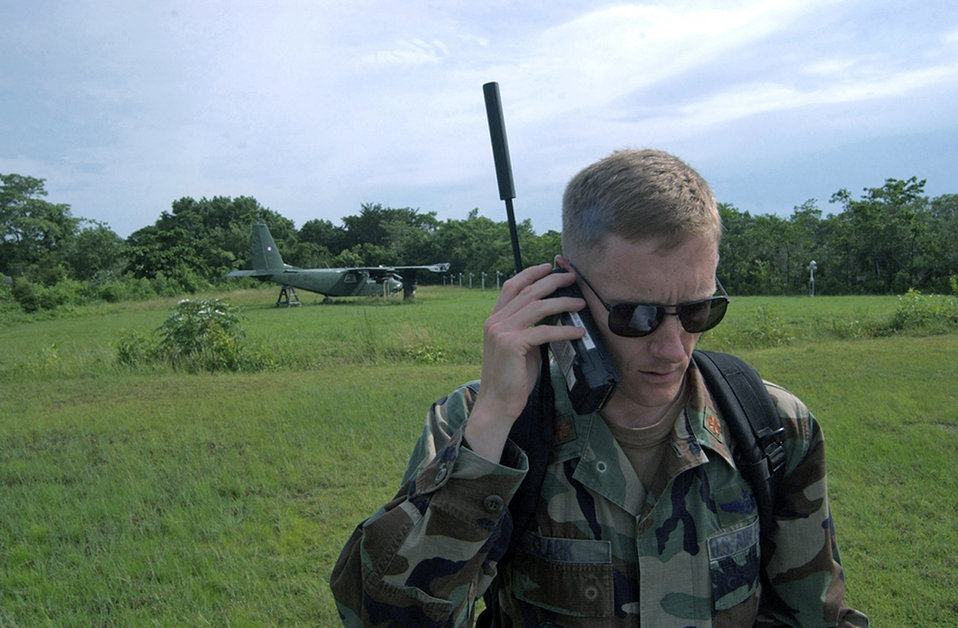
Assessment team arrives in Belize

Maj. Jason Clark uses a satellite phone to contact Joint Task Force-Bravo headquarters at Soto Cano Air Base, Honduras, shortly after touching down at Belize City, Belize. Approximately 20 Soldiers and Airman from Soto Cano Air Base, Honduras, deployed here as part of an initial assessment team following Hurricane Dean Aug 21. Major Clark is the operations officer for the tactical operations center.